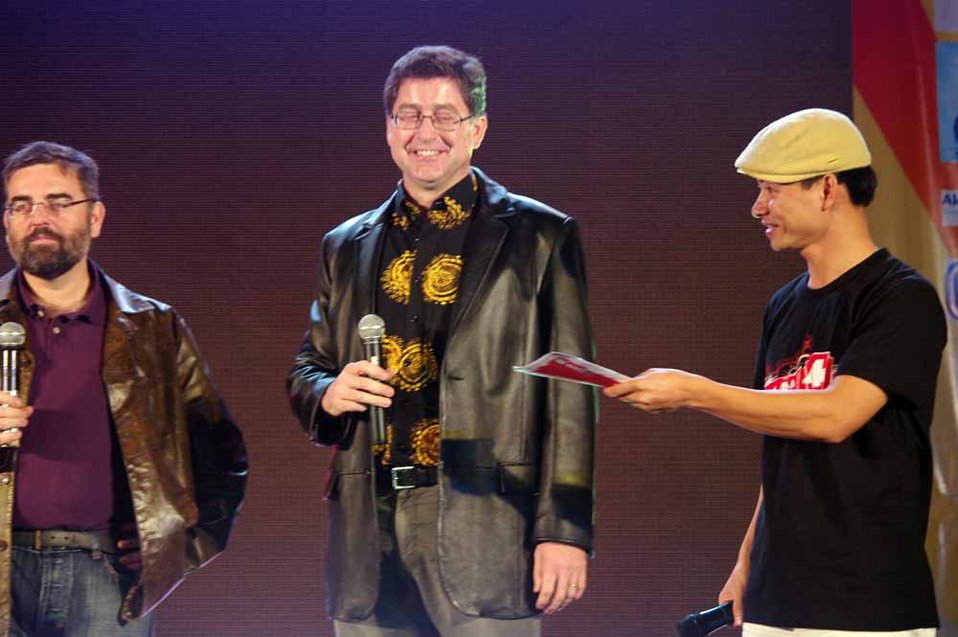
dance4life, Hanoi